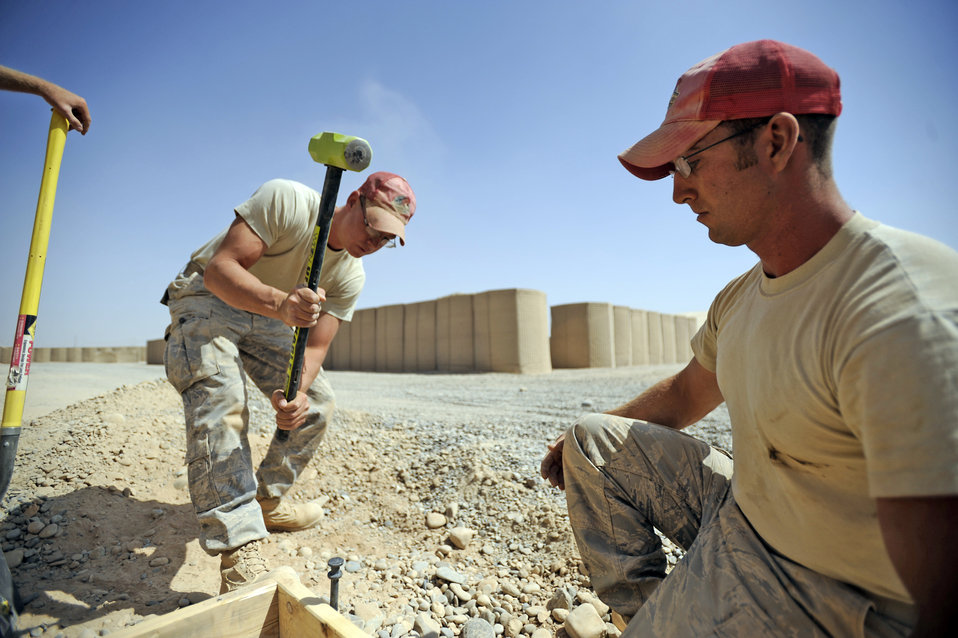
RED HORSE Airmen bring combat outpost into fight

Staff Sgt. Johnathon Stone (left) and Staff Sgt. Daniel Berner hammer down stake for a cement pad Sept. 9, 2009 at Forward Operating Base Dwyer, Afghanistan. Staff Sgt. Stone and Staff Sgt. Berner are deployed from the 819th Red Horse Squadron, Malmstrom, AFB, MT These Airmen are assigned to the 809th Expeditionary Red Horse Squadron, 1st Expeditionary Red Horse Group.